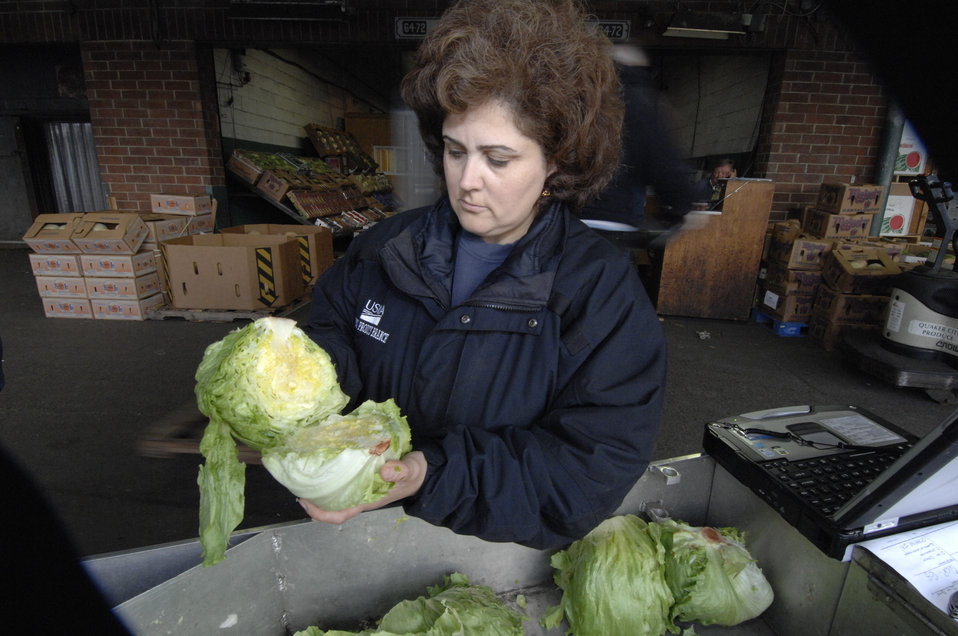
U. S. Department of Agriculture (USDA) Agricultural Marketing Service (AMS) inspector Susan Muriella examines lettuce in Philadelphia, Pennsylvania at the Philadelphia Food Distribution Center on May 21, 2008.